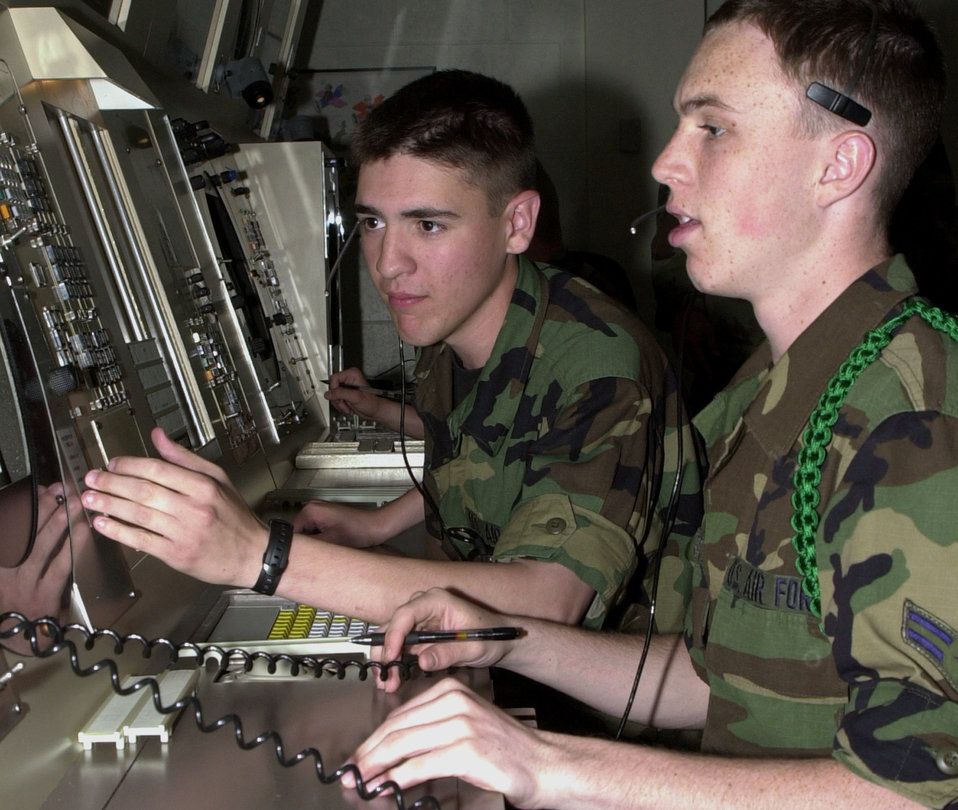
Radar exercise

KEESLER AIR FORCE BASE, Miss. -- Airman Basic Nikolas Conors, left, and Airman 1st Class Craig Beatty run through a radar exercise. The airmen are attending air traffic control school here.